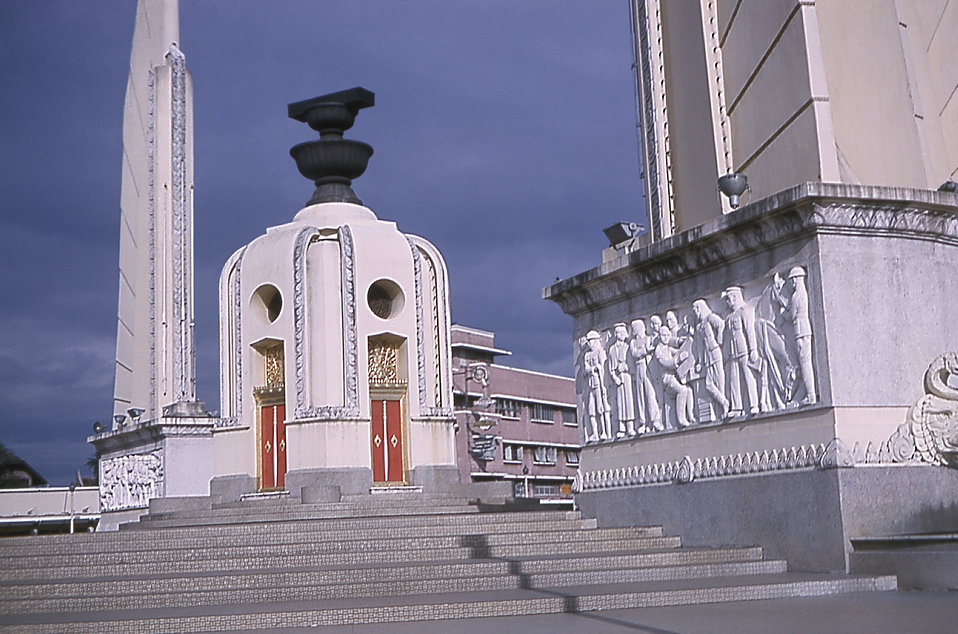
This is a photograph of a war memorial in Bangkok, Thailand.